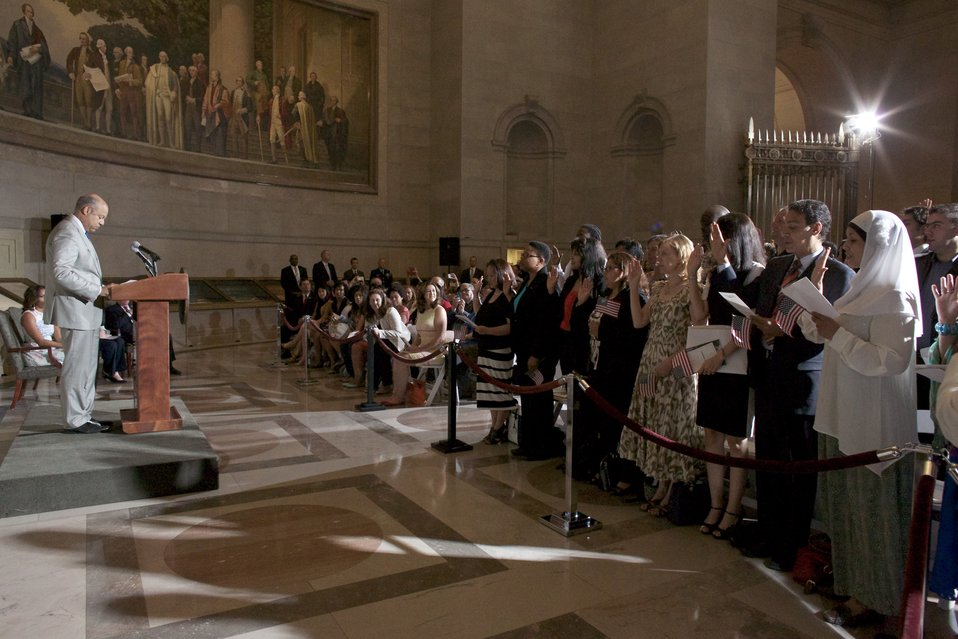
Naturalization Ceremony with Michelle Obama